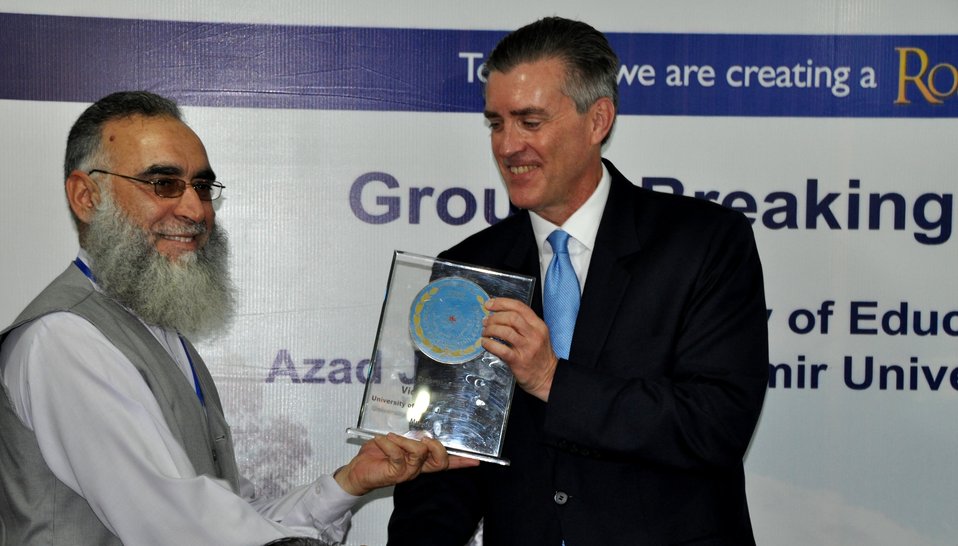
The United States Ambassador to Pakistan, Richard Olson broke ground for a U.S. funded construction of a new Faculty of Education building in Muzaffarabad, AJK. 14